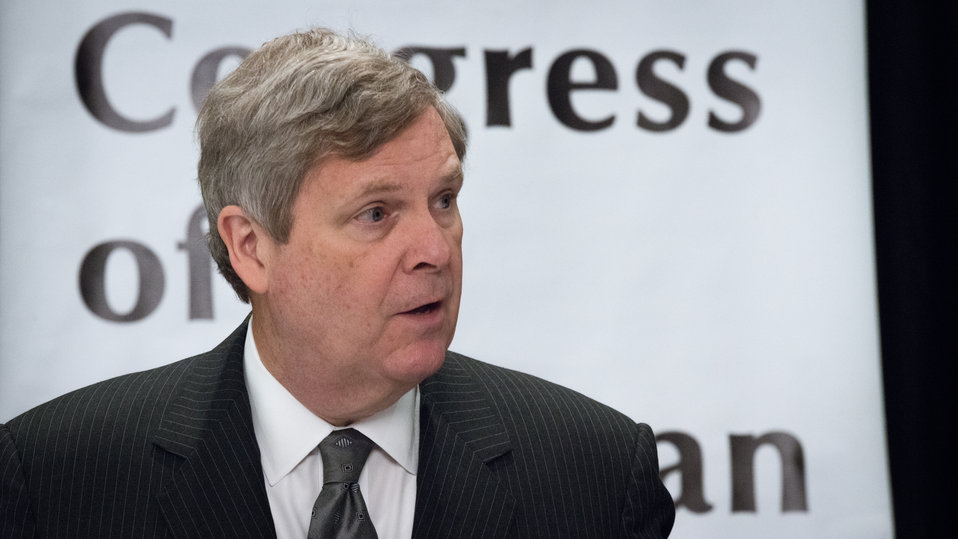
Agriculture Secretary Tom Vilsack addresses the 2014 National Congress of American Indians (NCAI) Executive Council Winter Session at the Westin Washington City Center in Washington, D.C. on Thursday, Mar. 13, 2014.